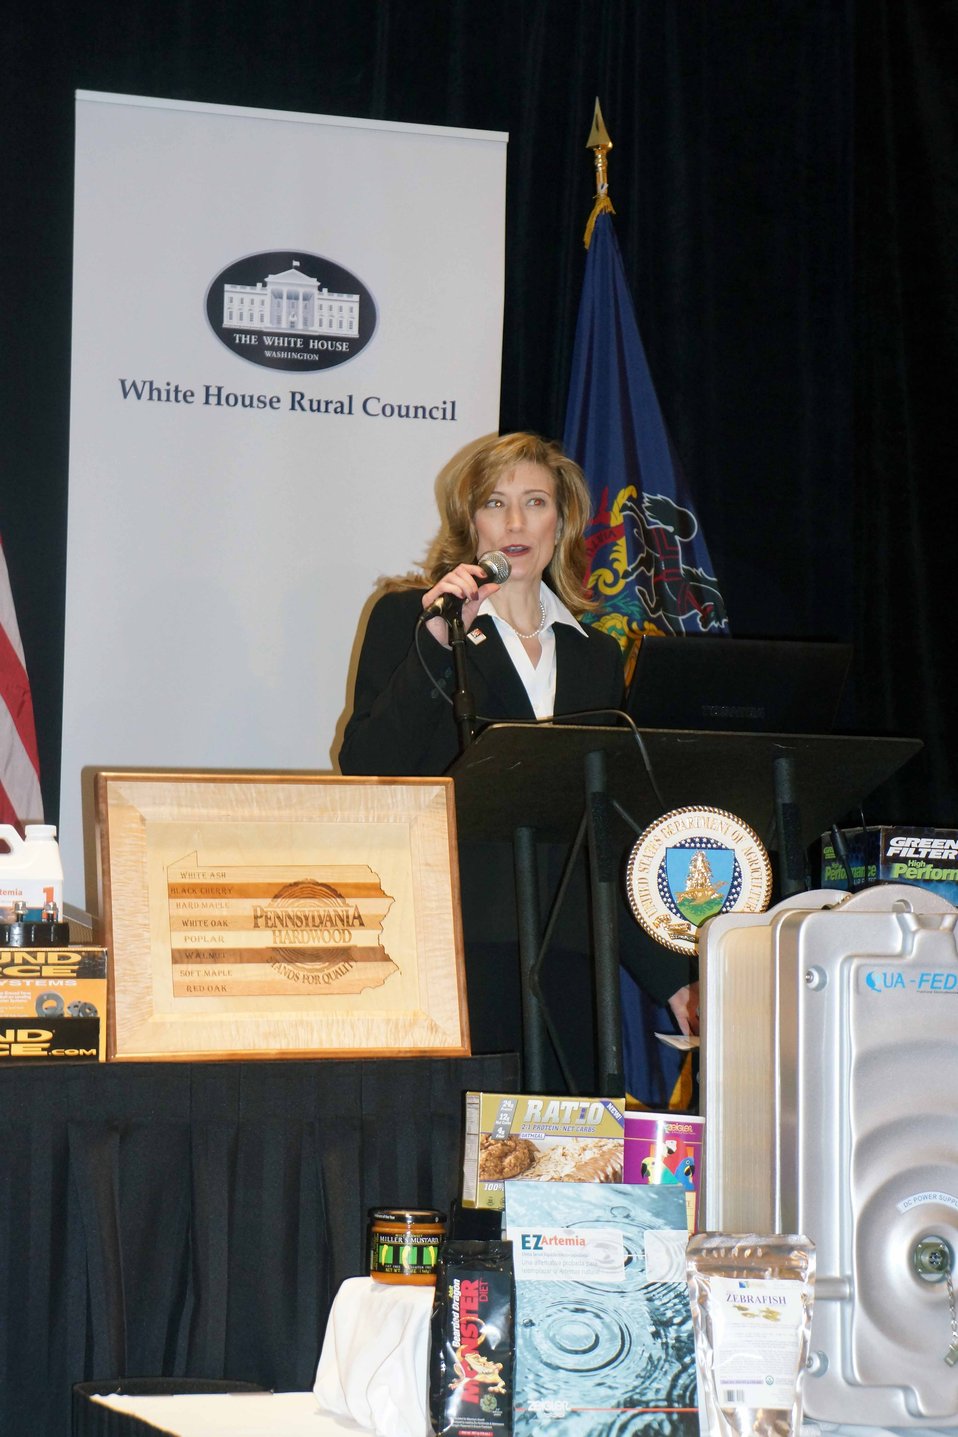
U.S. Commercial Service representative Lyn Doverspike talks about local services for small businesses interested in exporting at the “Made in Rural America Regional Forum” held in Canonsburg, PA on Jun. 4, 2014. Doverspike explains that the #1 and #2 markets for the U.S. are Canada and Mexico with transportation equipment and computer and electronics topping the list for type of goods.